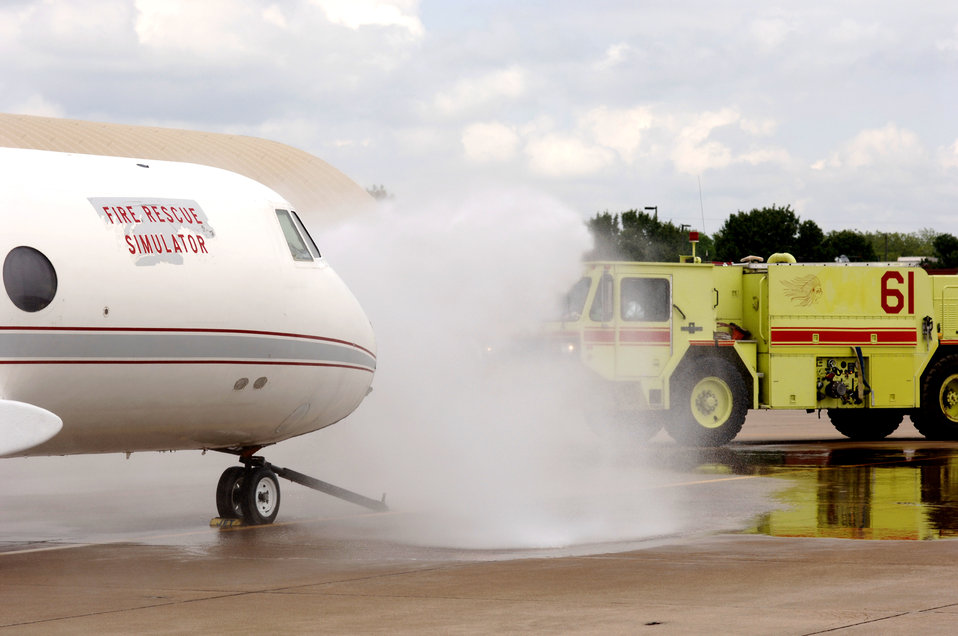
Firefighter training

A fire rescue simulator is sprayed by firefighters from the Air National Guard's 138th Civil Engineer Squadron in Tulsa, Okla., on Sunday, May 7, 2006, during a fire training exercise.